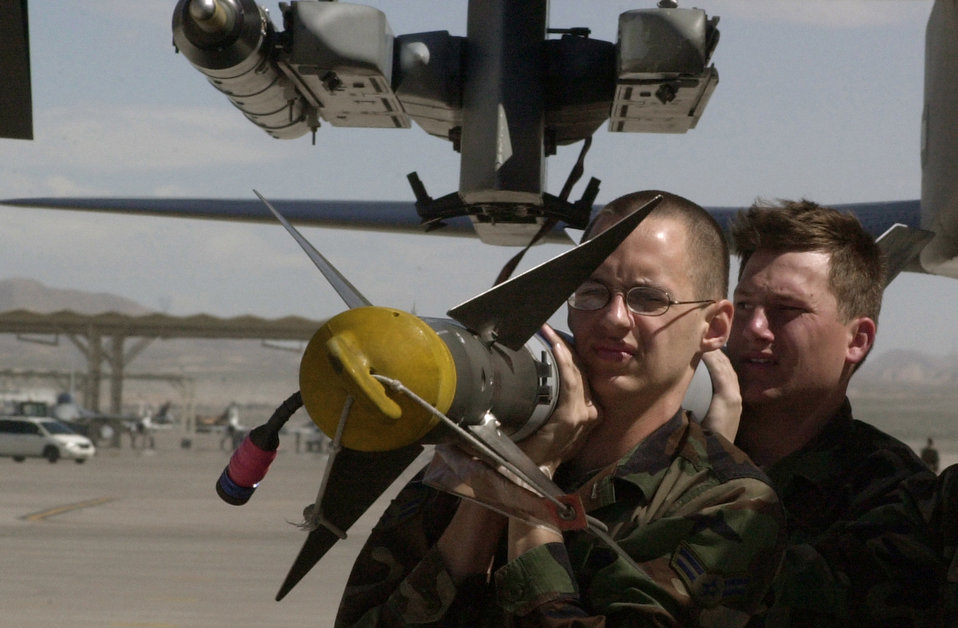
Flying the flag

NELLIS AIR FORCE BASE, Nev. -- Airman 1st Class Mathew Quinn (front) and Senior Airman Lucas Long prepare to load a missile onto an F-15 Eagle here March 28. About 10,000 U.S. and coalition forces are participating in the exercise, which runs through April 2. The Airmen are weapons loaders from the 46th Aircraft Maintenance Squadron at Eglin Air Force Base, Fla.